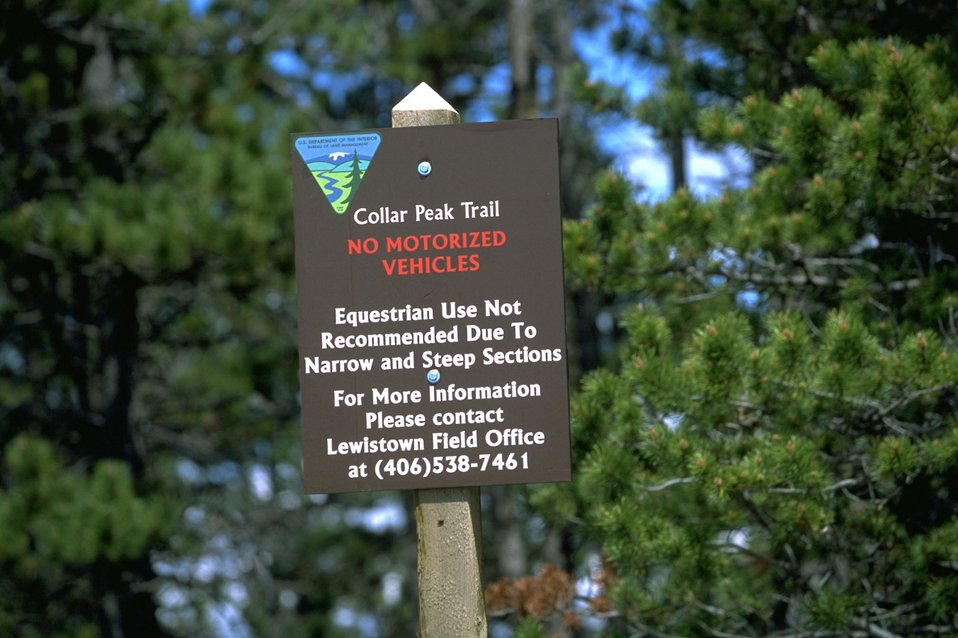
Collar Peak Trail sign in the Judith Mountains